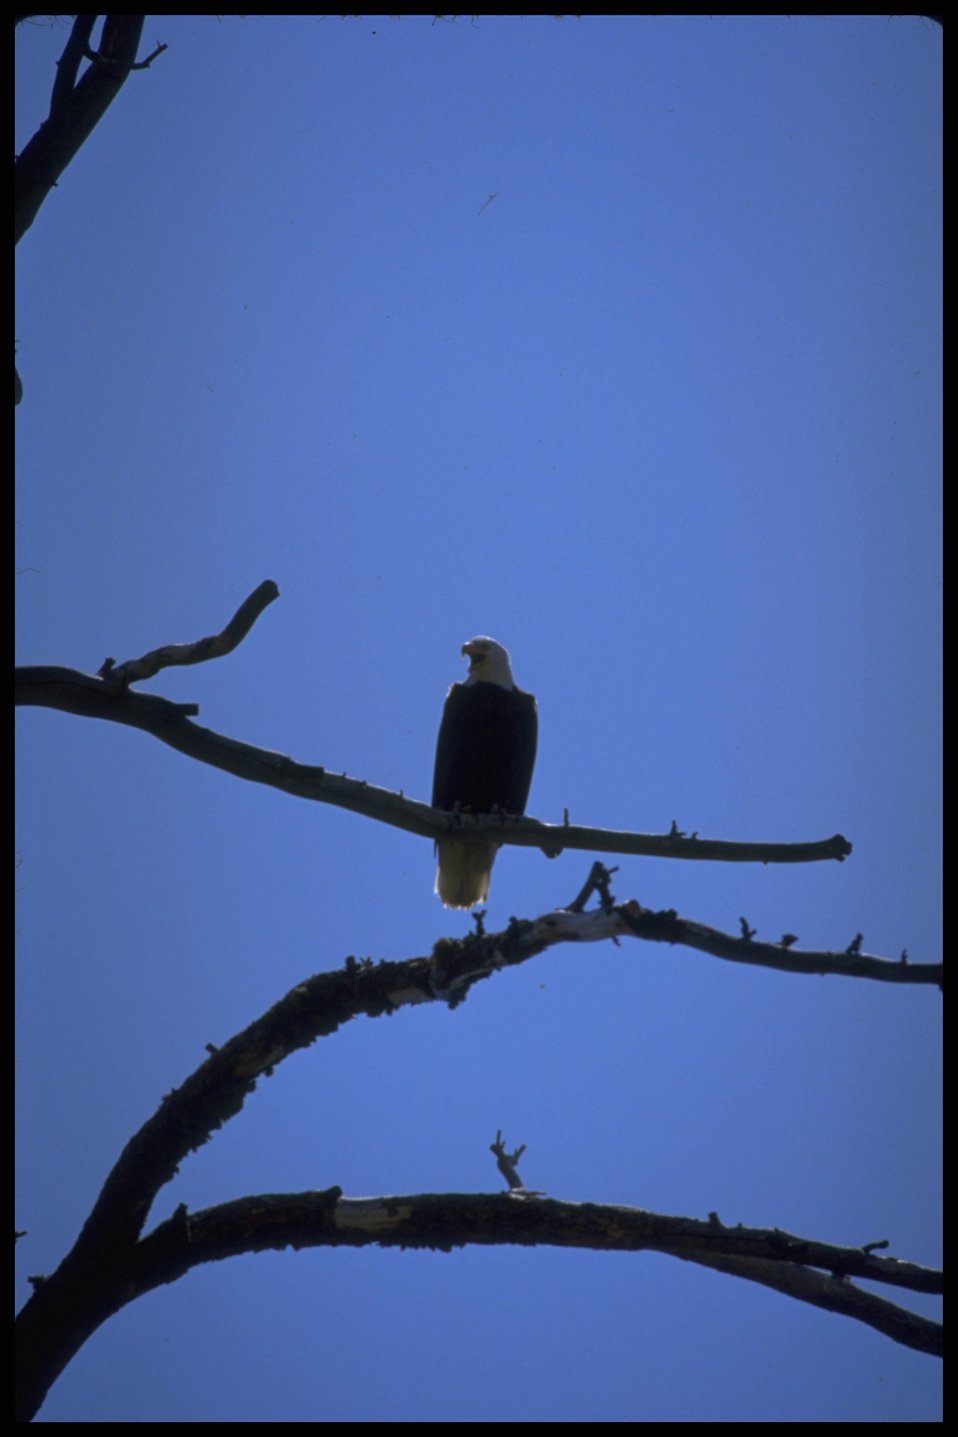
Farshot of Bald Eagle perched on tree branch. Lakeview District.